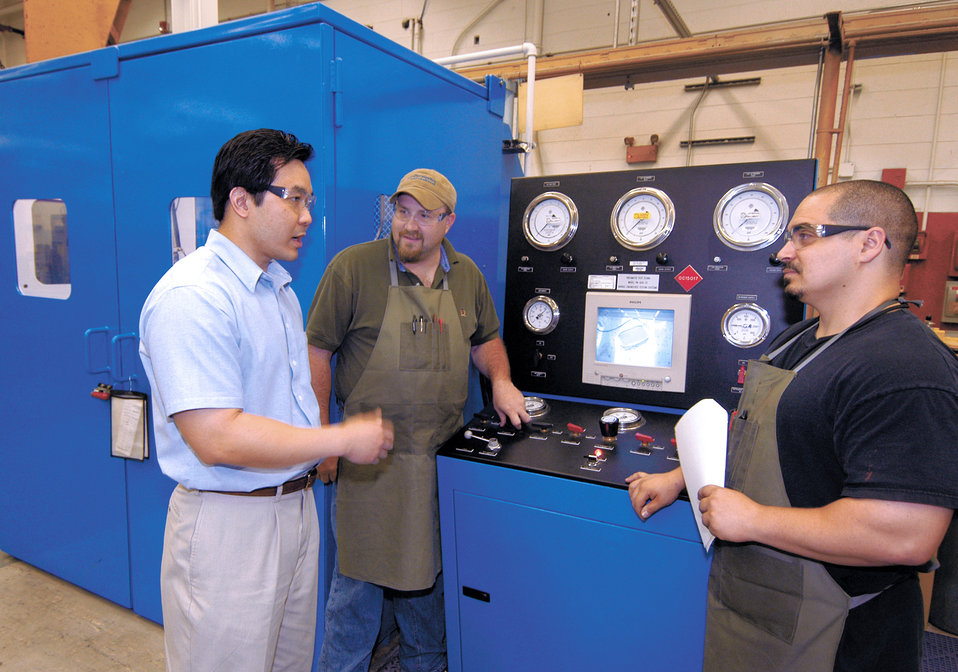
Newly designed chamber increases aircraft safety

TINKER AIR FORCE BASE, Okla. -- Chris Truoccolo (right) and Russell Keene discuss the safer test stand that Don Ngo (left) designed so aircraft parts could be pressure tested while technicians remain protected in case of explosions. They are with the Tank and Cooler Unit at the Oklahoma City Air Logistics Center here.